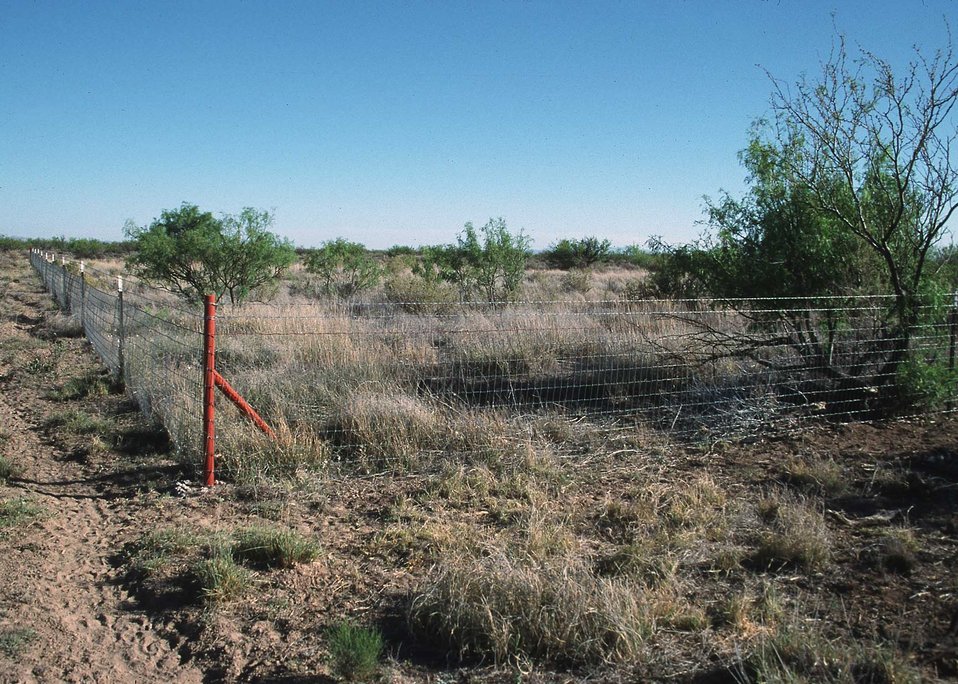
This wildlife habitat area is fenced off in desert rangeland in southern New Mexico.